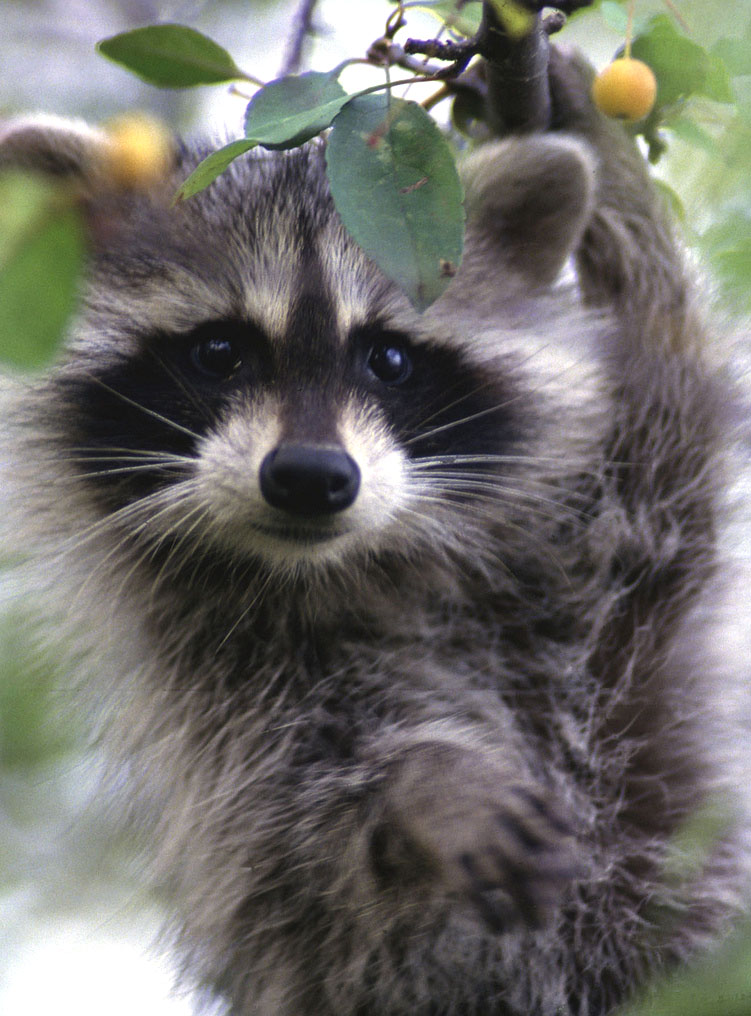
Photo of the Week - Raccoon (PA)

Photo of the week - 7/2/12

Young raccoon in crab apple tree at John Heinz National Wildlife Refuge in Philadelphia.